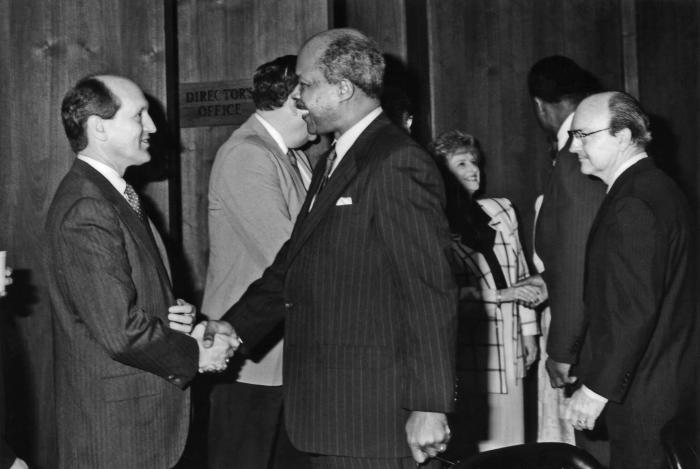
This 1989 photograph showed (left to right) Dr. Gary R. Noble as he was shaking hands with the newly appointed Secretary of Health and Human Services, Dr. Louis W. Sullivan. To the far right, Dr. Walter Dowdle could be seen taking in the festivities.